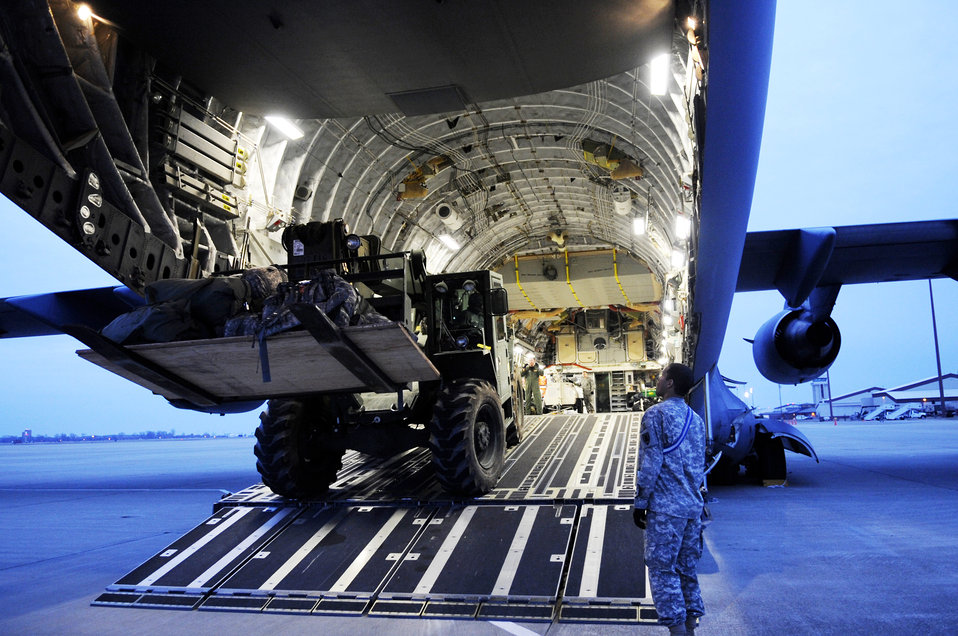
On the way

U.S. Army Sgt. Nickolas Lewis observes as equipment is loaded onto a C-17 Globemaster III Jan. 16, 2010, at Langley Air Force Base, Va., bound for Port-au-Prince, Haiti, to support relief efforts, save lives and alleviate human suffering following the devastating earthquake there.